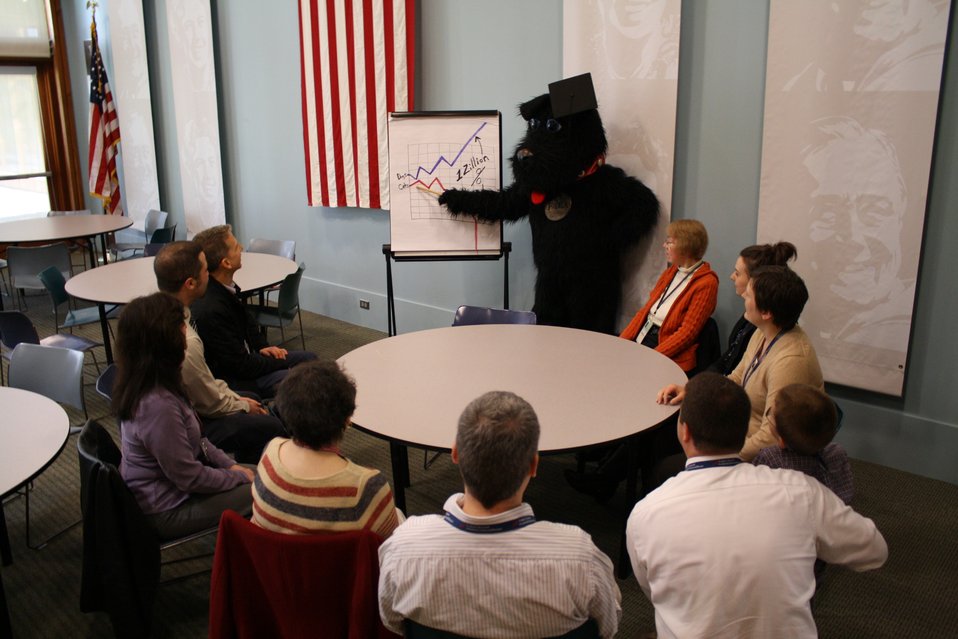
Fala leads an important discussion on improving NARA's dog-cat diversity at a recent LP-FDR staff meeting.; Location: Franklin D. Roosevelt Presidential Library, Hyde Park, New York